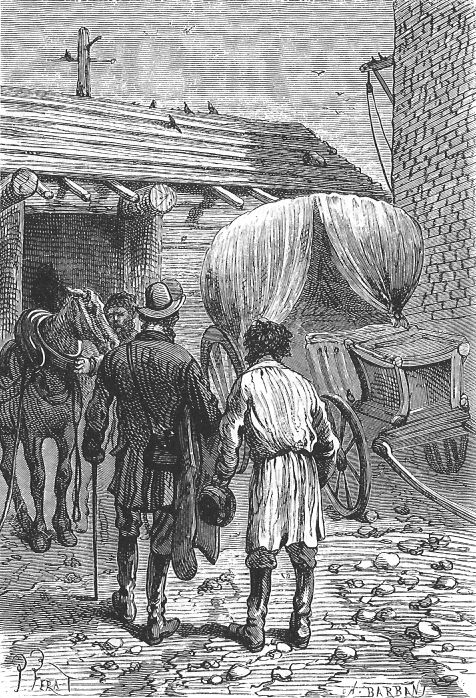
An illustration from the novel 'Michael Strogoff: The Courier of the Czar' by Jules Verne drawn by Jules Férat. Polski: Ilustracja powieści Juliusza Verne'a 'Michał Strogow, kurier carski' autorstwa Julesa Férata. Français : 'Michel Strogoff. Le courier du tzar', Jules Férat. Français : Le diligent Français avait trouvé un tarentass.